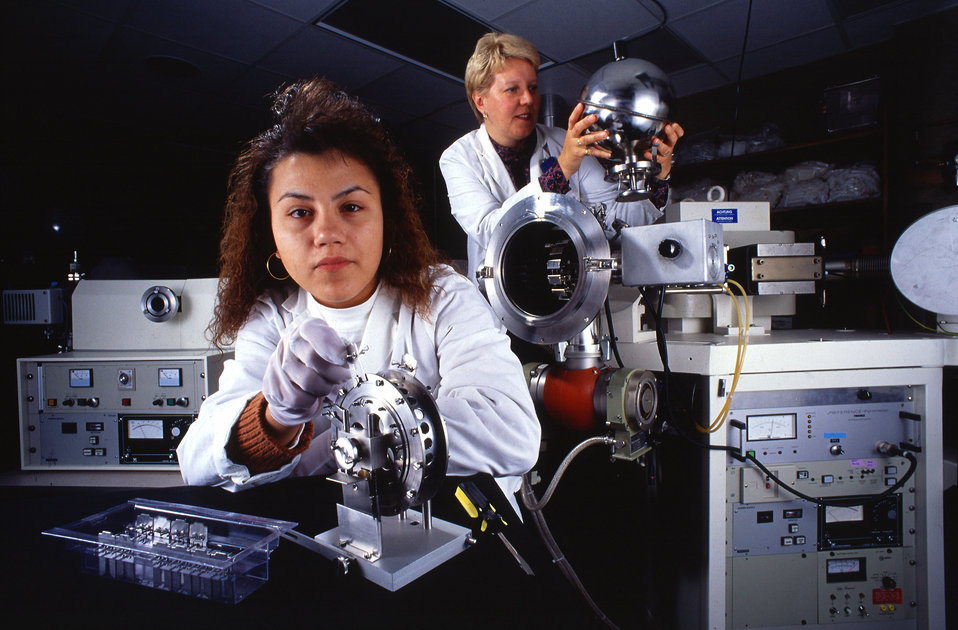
Biological aide Ellie Giron (left) and U.S. Department of Agriculture (USDA) Agriculture Research Service (ARS) chemist Phyllis Johnson prepare a sample for analysis at the USDA ARS Grand Forks Human Nutrition Research Center in Grand Forks, ND.